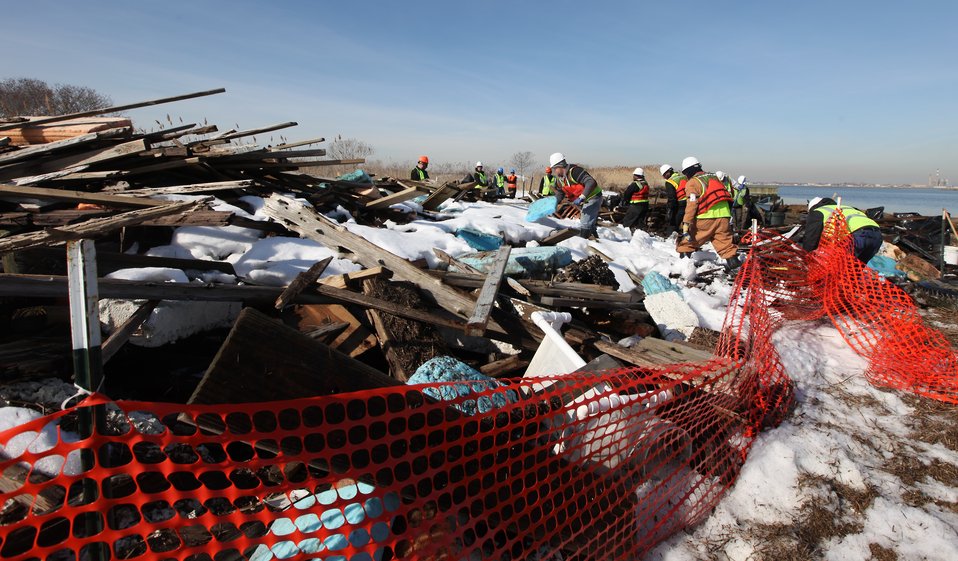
Ground crew stages debris for removal by watercraft at Lido Beach WMA.